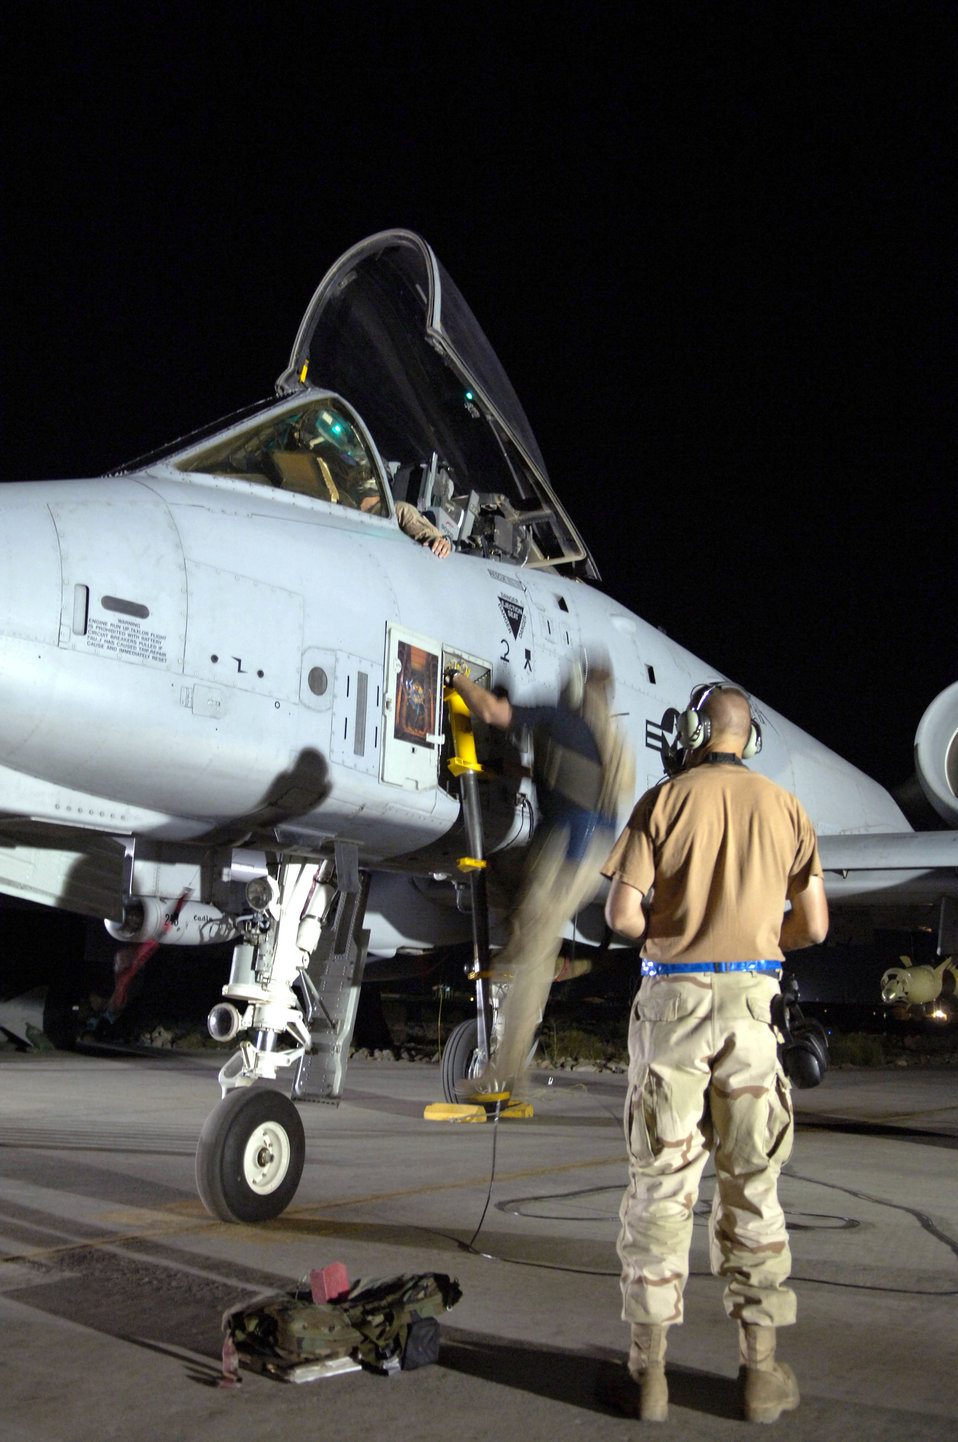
A-10, ready for action

Two crew chiefs assist an A-10 Thunderbolt II pilot at Bagram Air Base, Afghanistan, after a mission July 6 in support of Operation Enduring Freedom. The A-10 is used for close-air support. The crew chiefs are assigned to the 455th Expeditionary Aircraft Maintenance Squadron.